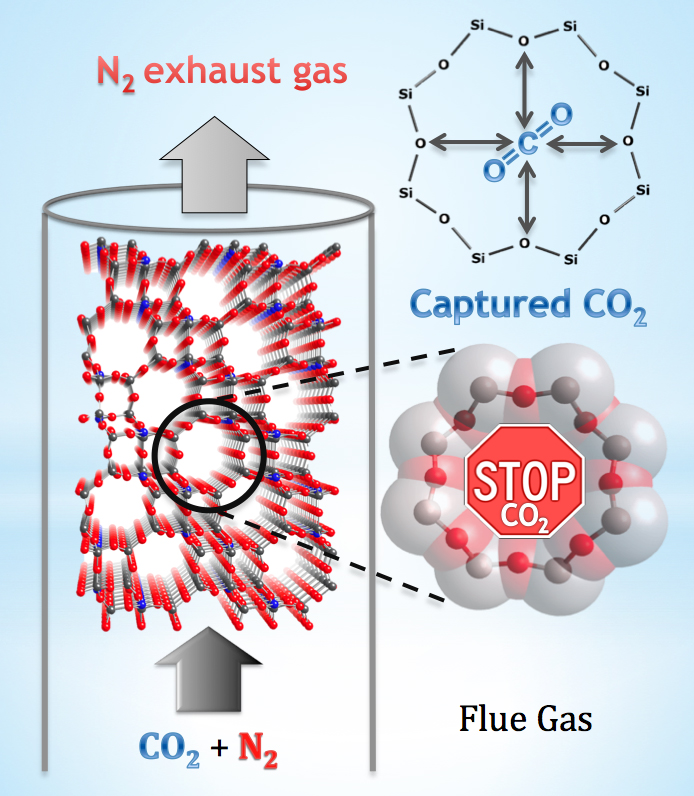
Zeolite

The roughly octagonal pores in zeolite SSZ-13 are like stop signs for carbon dioxide, capturing molecules of the greenhouse gas while apparently letting other substances through. The material could prove to be an economical smokestack filter.